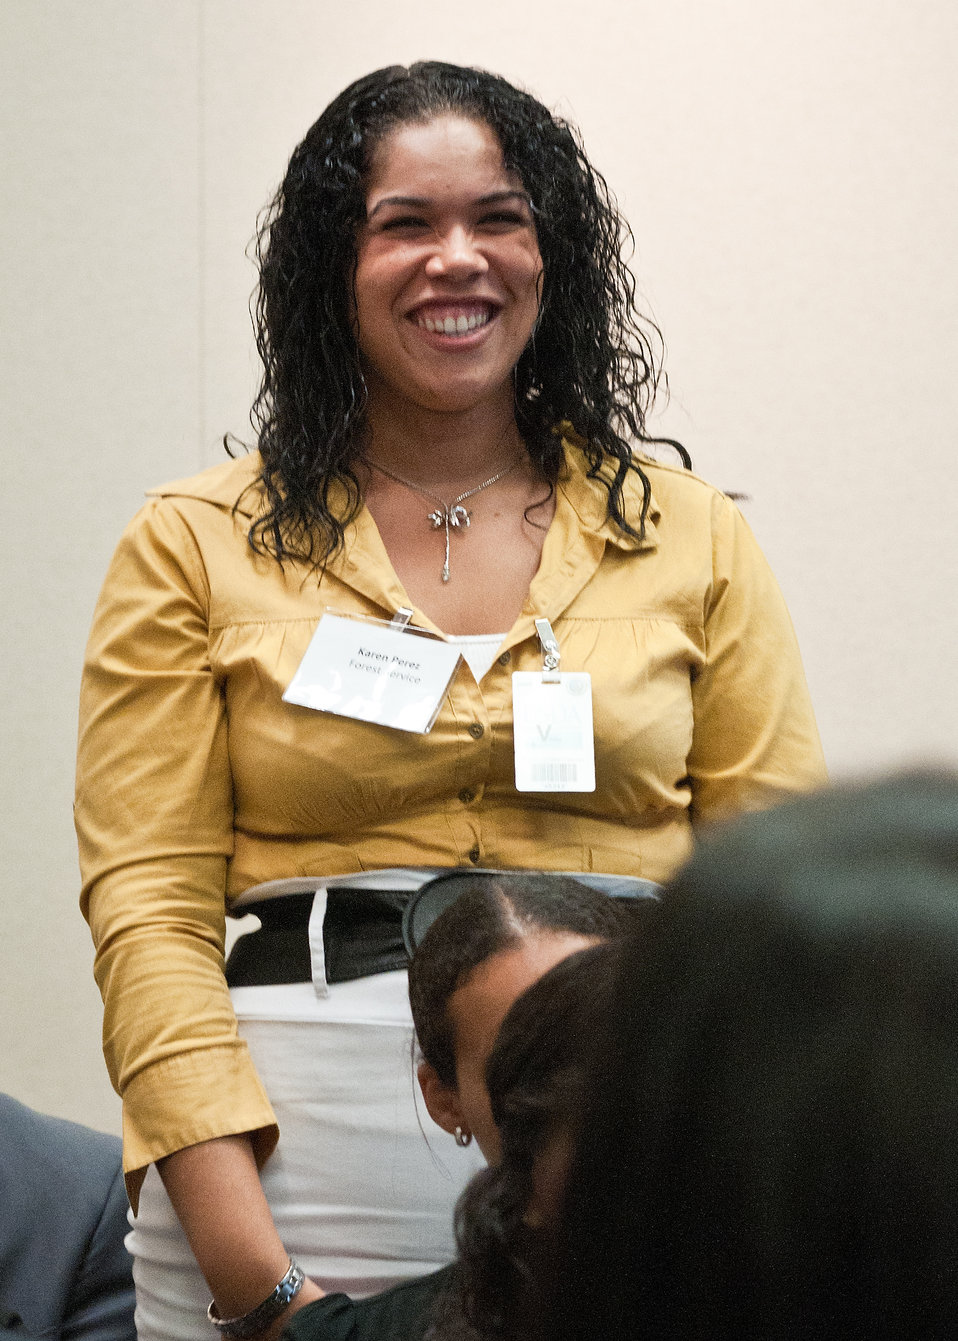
University of Miami (Florida), Aerospace/Mechanical Engineering graduate Karen Perez questions one of the speakers at the United States Department of Agriculture (USDA) Hispanic Association of Colleges and Universities (HACU) during the USDA/HACU/Tribal College Summer Intern Orientation Program at USDA in Washington, DC, Monday, Jun. 6, 2011. The HACU/Tribal College National Internship Program represents more than 400 colleges and universities committed to higher education in the U.S., Puerto Rico, Latin America, Spain and Portugal and places student interns each year with federal agencies in Washington, DC or in field offices around the country.